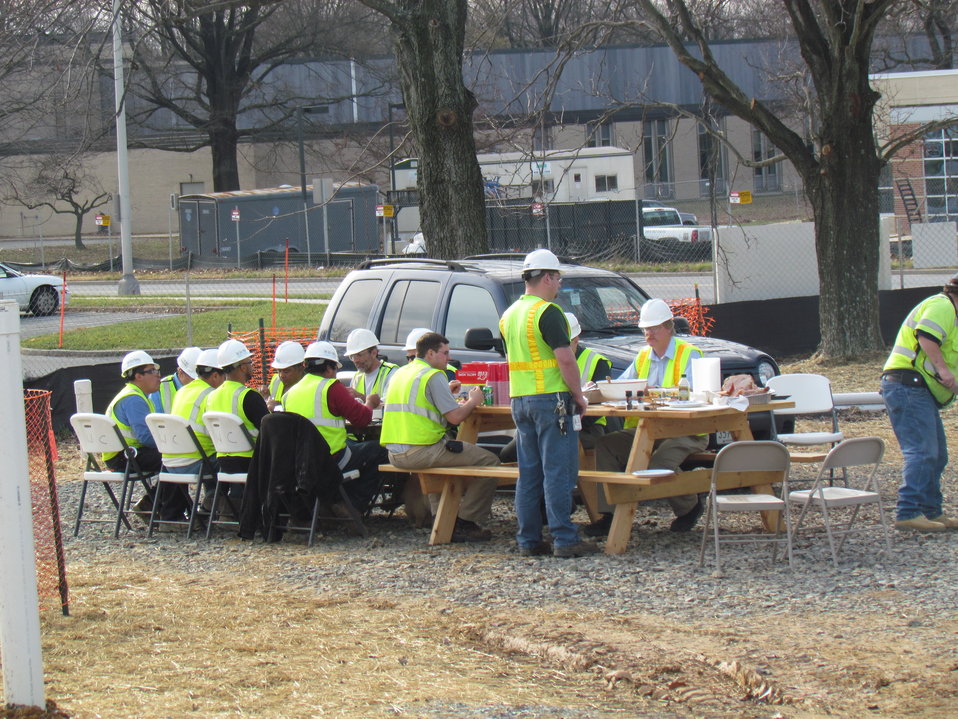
Net-Zero Energy Residential Test Facility – Photo showing construction team having lunch just prior to the December Holidays.